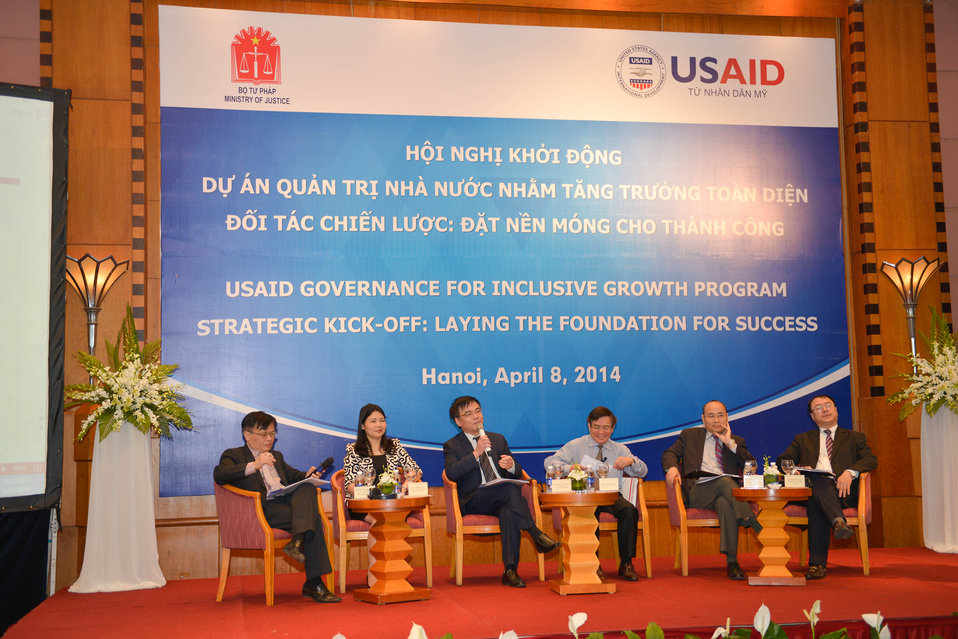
Strategic Kick-off of Governance for Inclusive Growth Program

Hanoi, April 8, 2014.